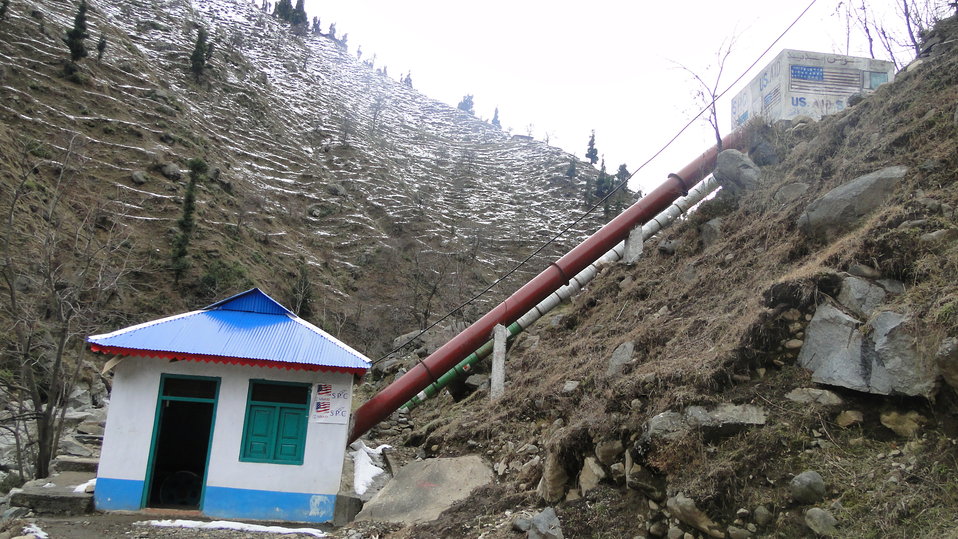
microhydel Swat